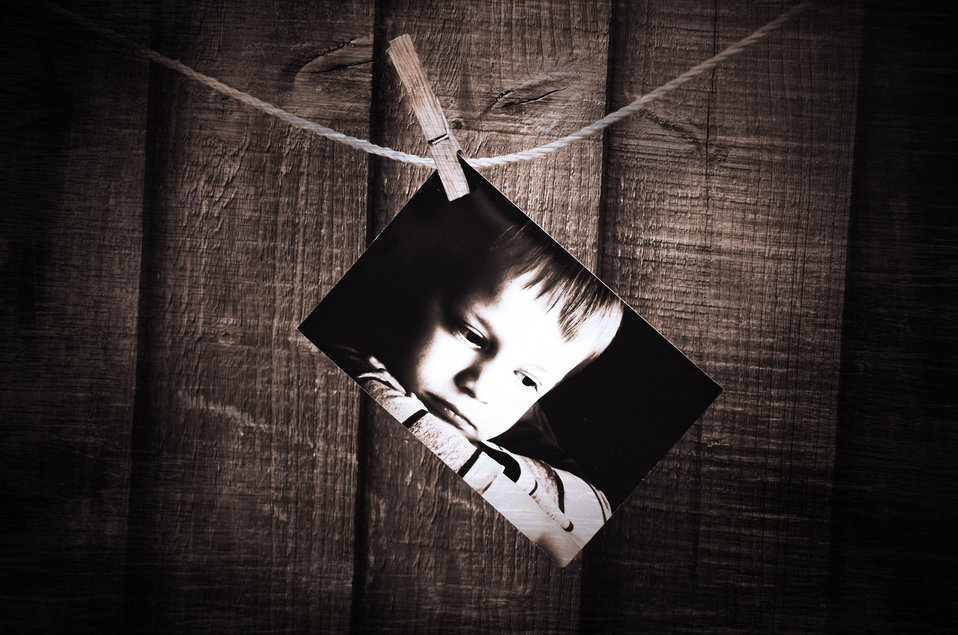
Picture of sad boy.